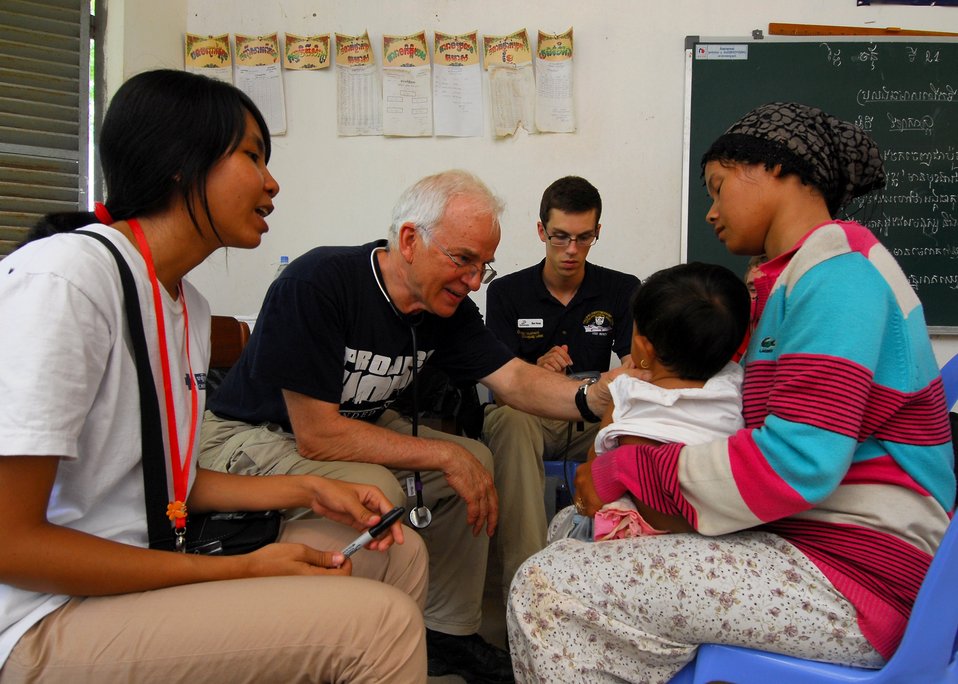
Project HOPE Volunteer Dr. John Neale Examines a Child

Dr. John Neale, a Project HOPE volunteer, examines a child on June 24, 2010, in Sihanoukville, Cambodia, during a medical civic action event. The Military Sealift Command hospital ship USNS Mercy (T-AH 19) is in Cambodia in support of Pacific Partnership 2010.